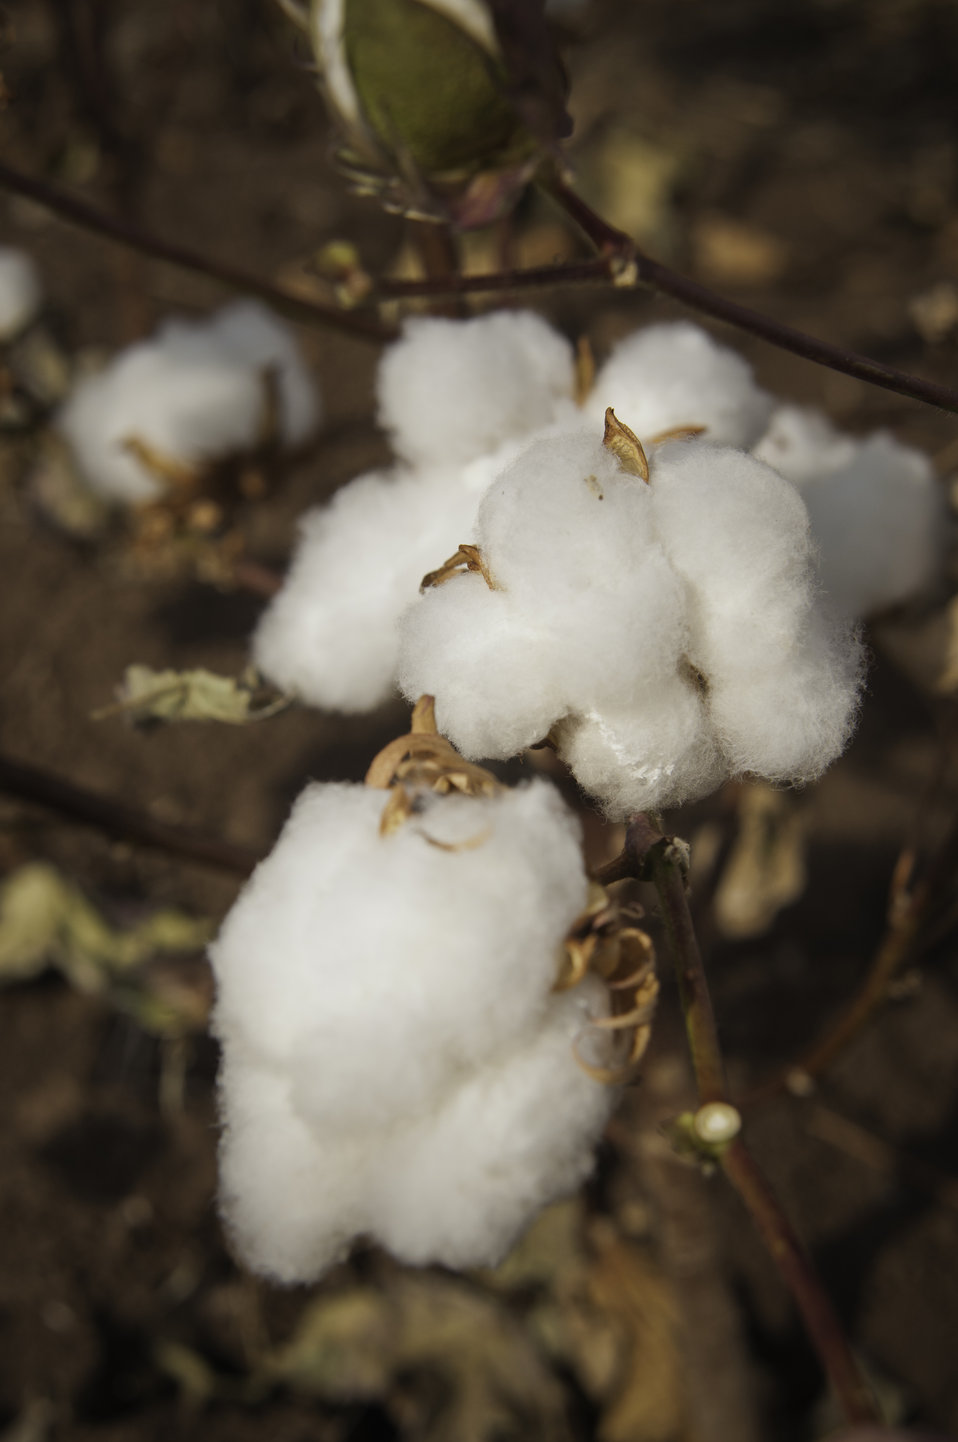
Dry Land cotton grows on a farm in Navasota, TX on Aug. 23, 2013.